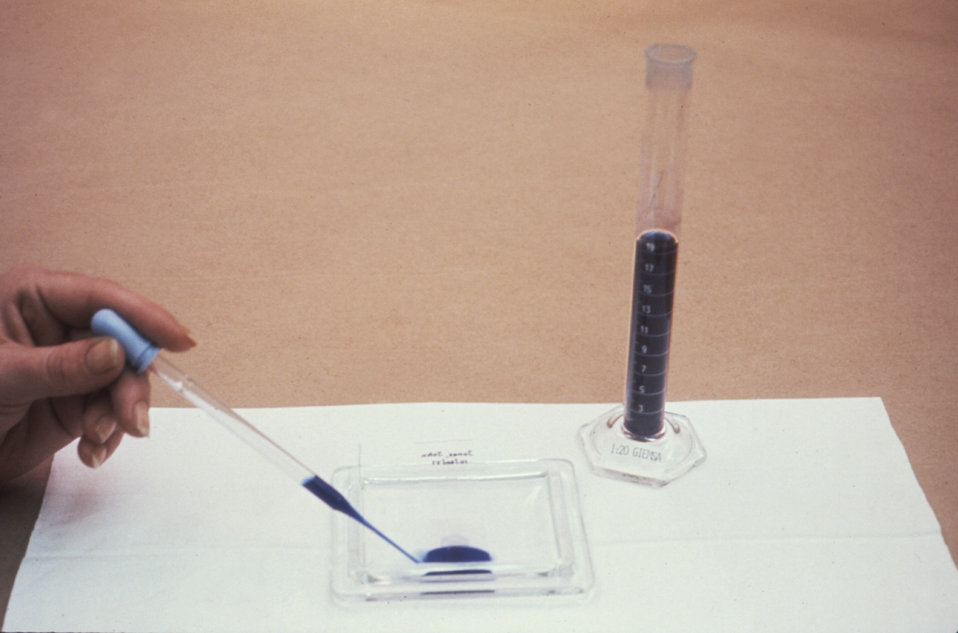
This laboratorian is staining a thick blood film using the Giemsa stain technique in a parasitology lab.